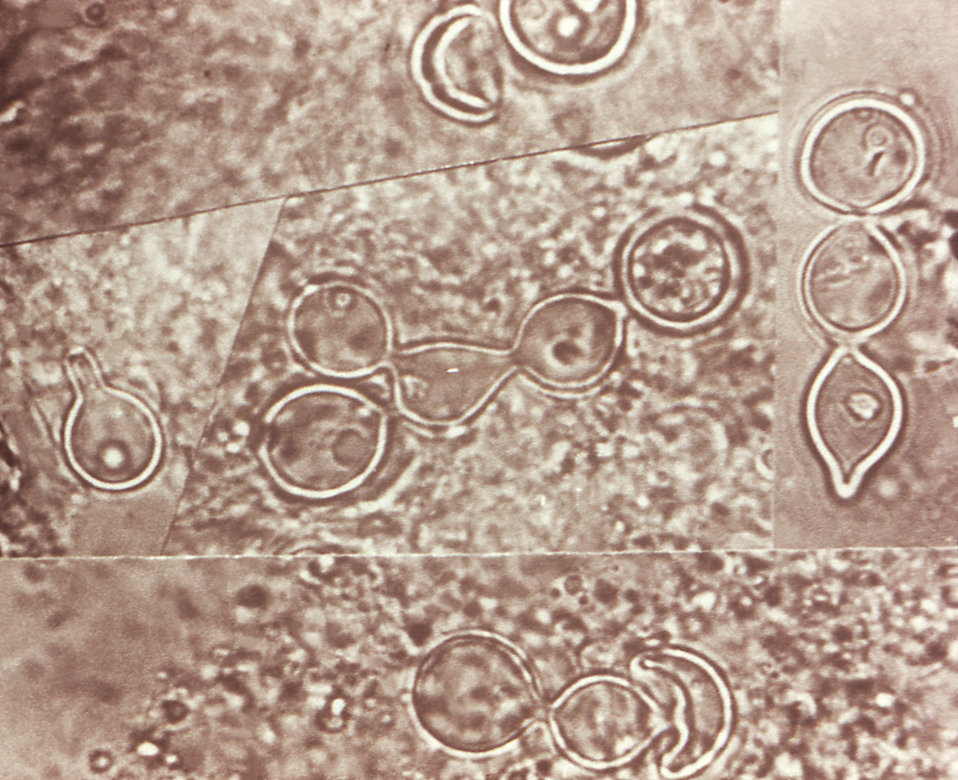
This composite photomicrograph reveals some of the ultrastructural histopathology in a tissue specimen from a patient with a keloidean blastomycosis infection, which was caused by the fungus, Blastomyces dermatitidis. The specimen originated from tissue scraping samplings. It's important to note the abundance of large budding cells that had been configured in chains.